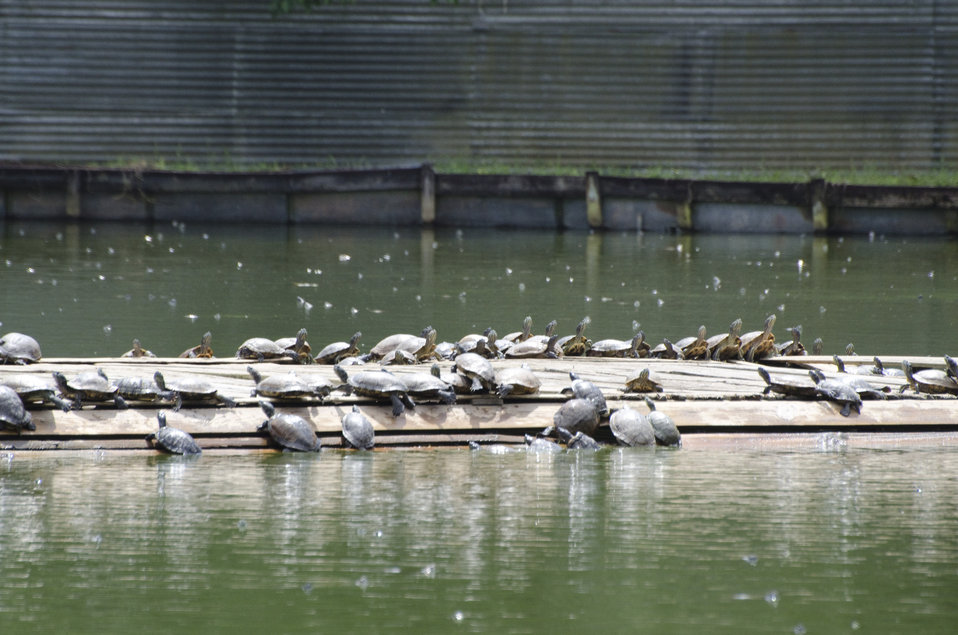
Sunbathing turtles

The delegates traveled to a Louisiana turtle farm to learn about their operations.